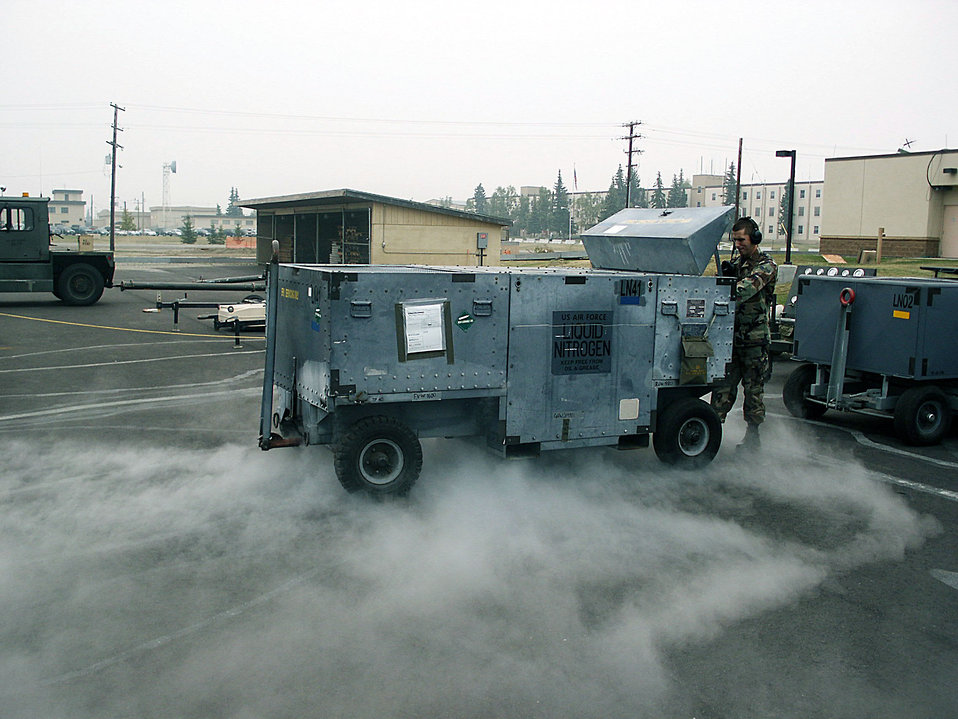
Cope Thunder trains warfighters

EIELSON AIR FORCE BASE, Alaska -- Airman 1st Class Gary Karlson prepares a liquid nitrogen cart Aug. 19 here during Cope Thunder 04-02. He is an electrical and environmental specialist with the 77th Fighter Squadron from Shaw Air Force Base, S.C.